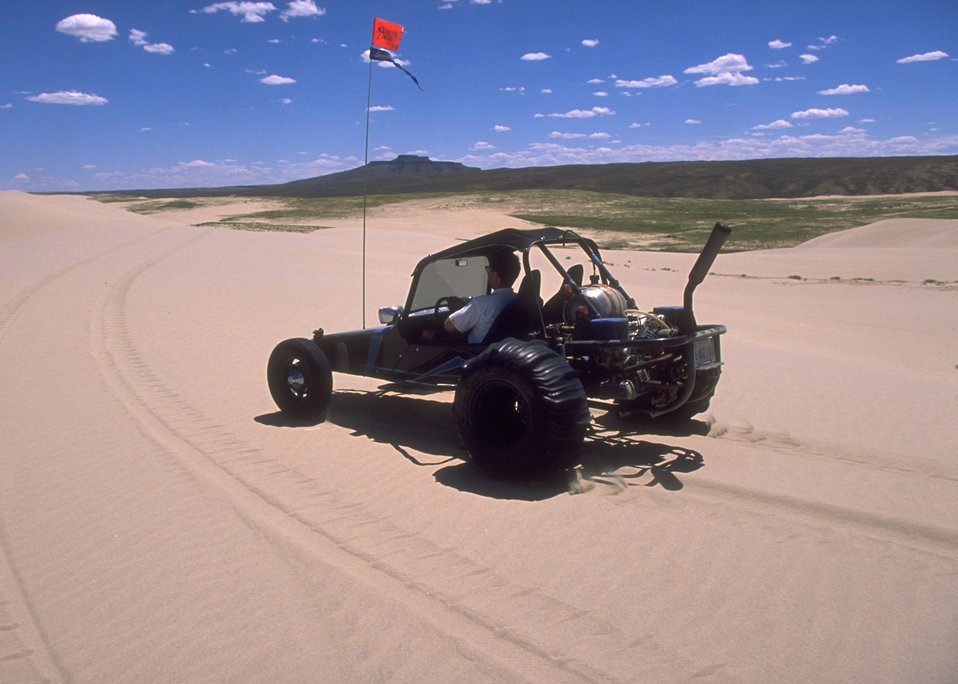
Sand Dunes OHV Area, Rock Springs Field Office.